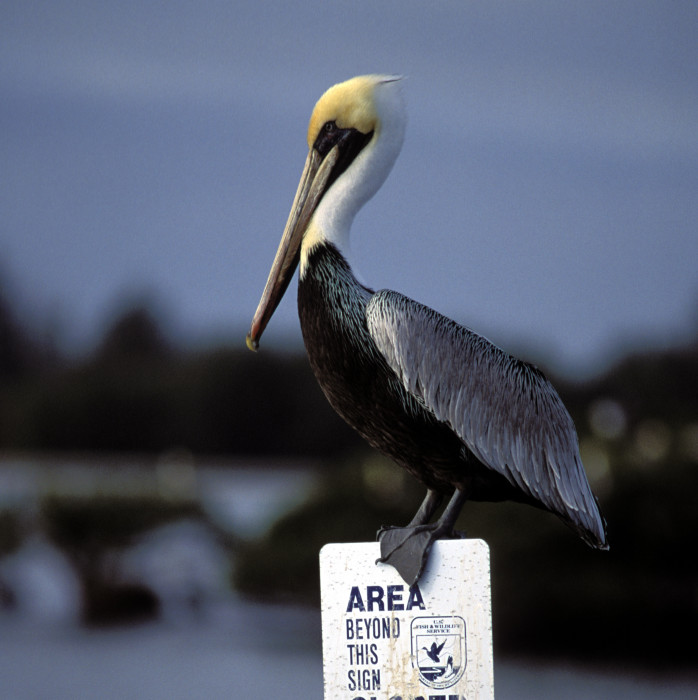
a pelican at home on Pelican Island

Pelican Island National Wildlife Refuge, FL
Photo: John and Karen Hollingsworth/USFWS
A Florida homesteader, Paul Kroegel, made history when he drew public attention to the assaults of plume hunters on the state's magnificent bird rookeries. In 1903 Pres. Teddy Roosevelt set aside Pelican Island as the nation's first wildlife refuge. Kroegel became its first warden and manager, drawing a salary of $1 a month.